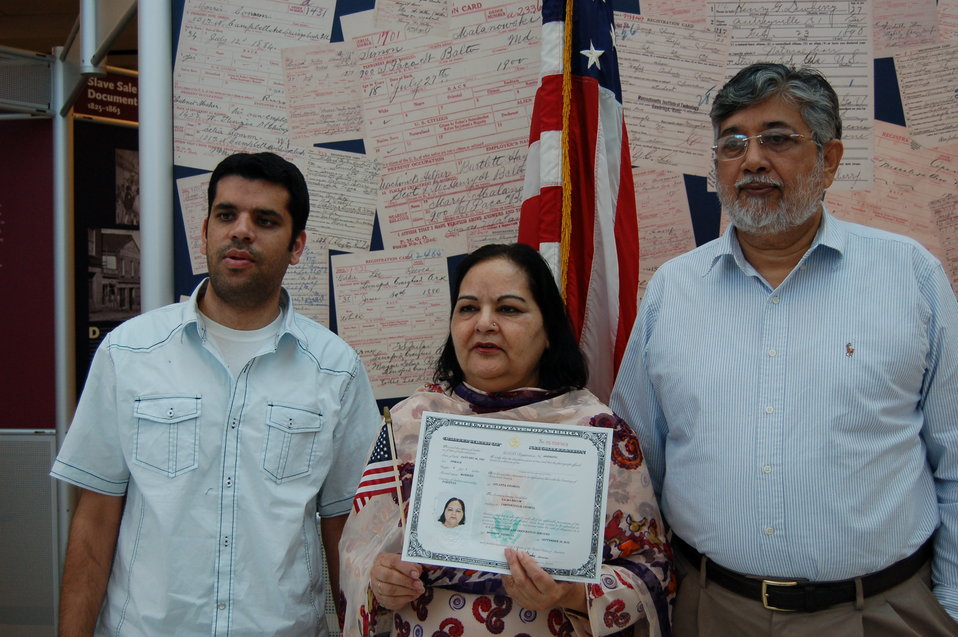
New Citizens